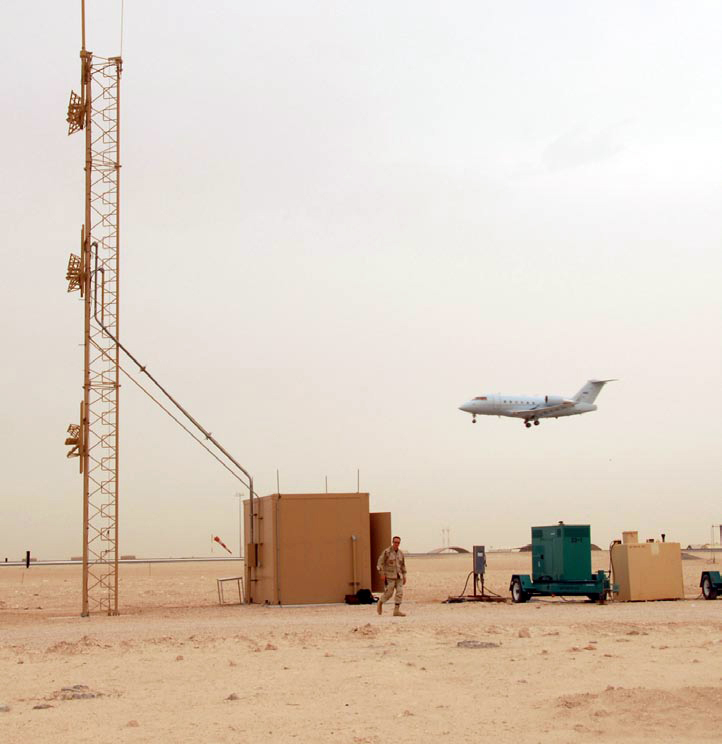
Air Force officials work on trimmed-down instrument landing system

A modified CL-60 Challenger aircraft flies a low-level approach past an instrument landing system being used in 2007 in Southwest Asia. The 853rd Electronic Systems Group staff will soon be releasing a request for proposals for a deployable instrument landing system, which will be leaner and more transportable.